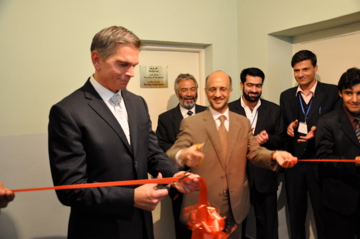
Kabul University Opens Newly Re-established Herbarium to help protect Afghanistan's Botanical Heritage